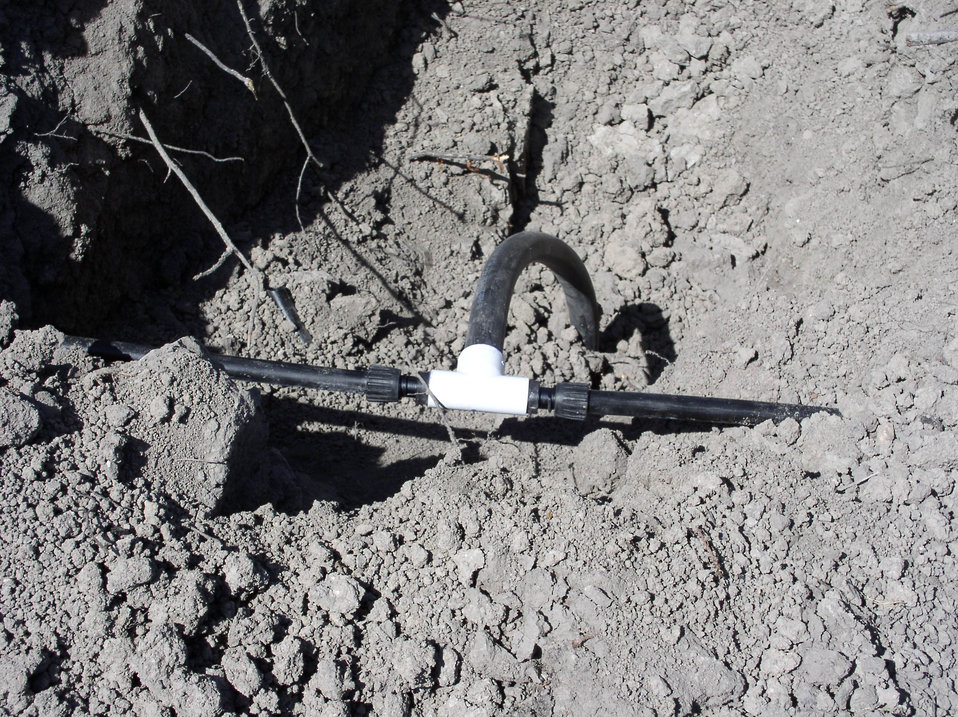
Trenches were dug for water distribution pipes and intermediary tubes at Arrowhead Farms for an underground micro drip irrigation system in Crystal City, TX, on Tuesday, March 29, 2010. An operational advantage of an underground irrigation system is that the hardware is protected from weather and heavy equipment can drive throughout the orchard with out harming the pipes or tubes. In all, about 25,000 feet of drip tubing was used. The 719-acre farm with 10,000 trees, features some orchards with underground micro irrigation system that feeds water to the roots of 4,380 pecan trees on 146 acres. Mr. Mohammad said, “USDA (U.S. Department of Agriculture) was essential to my business and trees surviving the recent exceptional drought. The trees were stress free thanks to underground micro-irrigation. This is essential to the future growth of Texas agriculture and good for America.” U.S. Department of Agriculture’s (USDA) Environmental Quality Initiative Program (EQIP) awarded Mr. Mohammad a $130,000 grant in 2008. He provided $26,000 for the balance of the $156,000 total cost to install a 146-acre underground micro-irrigation for 4,380 trees.